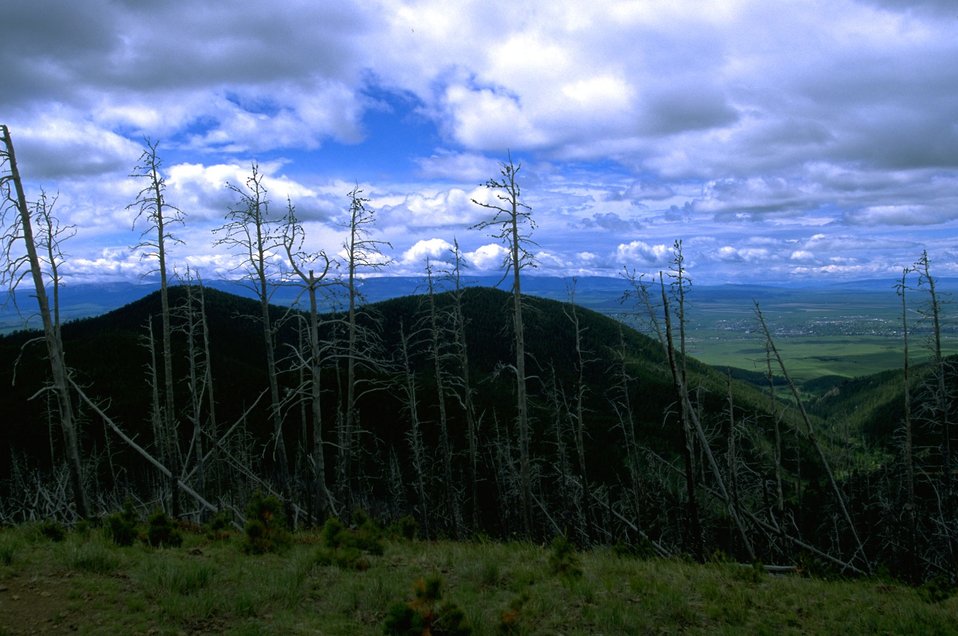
Stormy clouds in the Judith Mountains